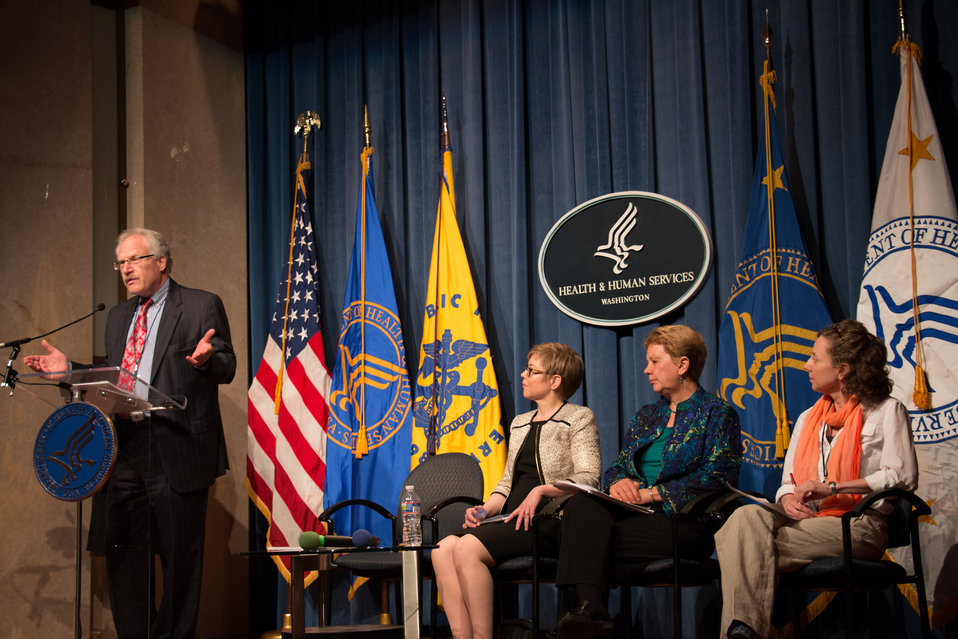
VHAP Launch (229 of 511)